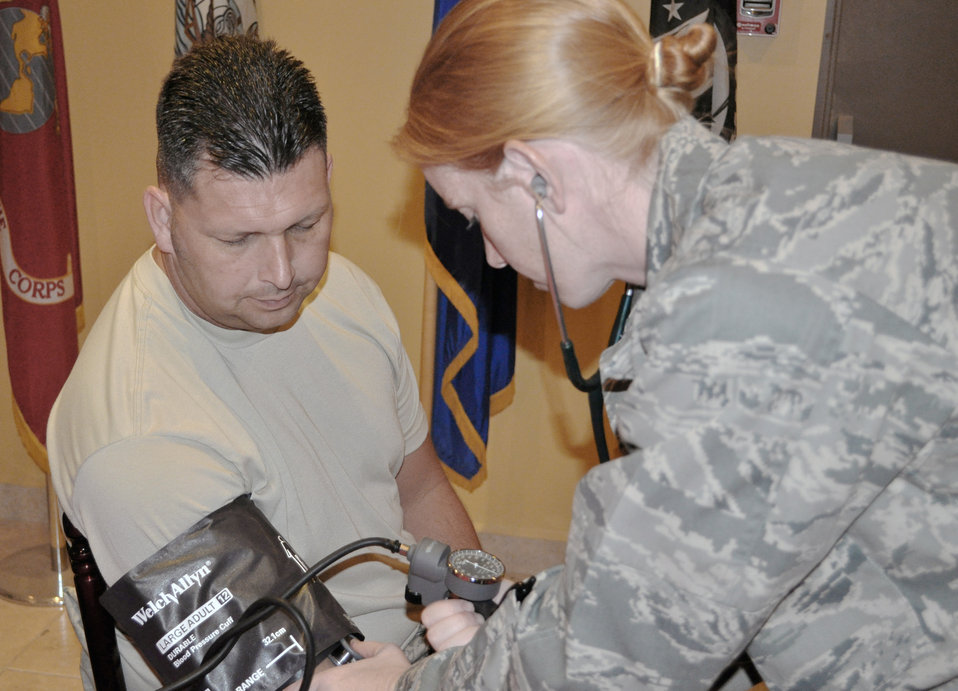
Airmen salute nurses, medical technicans

Capt. Nicole Gramlick checks the blood pressure of Senior Master Sgt. William Finch during a health fair April 14, 2010, at an air base in Southwest Asia. Captain Gramlick is a 386th Expeditionary Medical Group nurse, and Sergeant Finch is the 386th Expeditionary Civil Engineer Squadron fire chief.